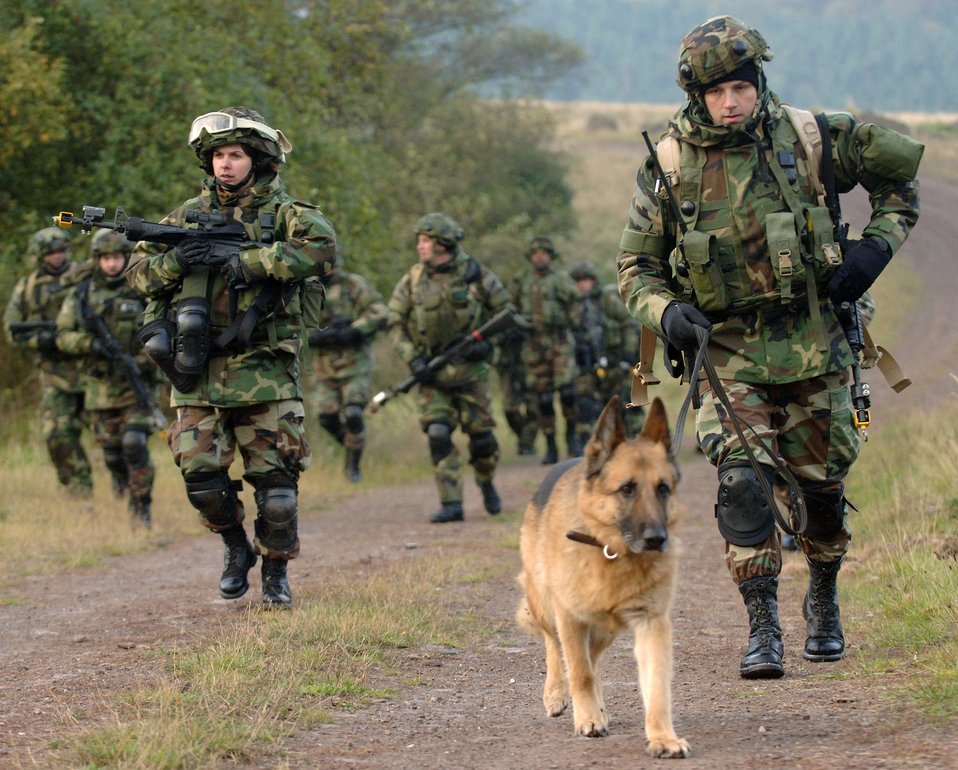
Creek Defender

Staff Sergeant Mark Reidl and his